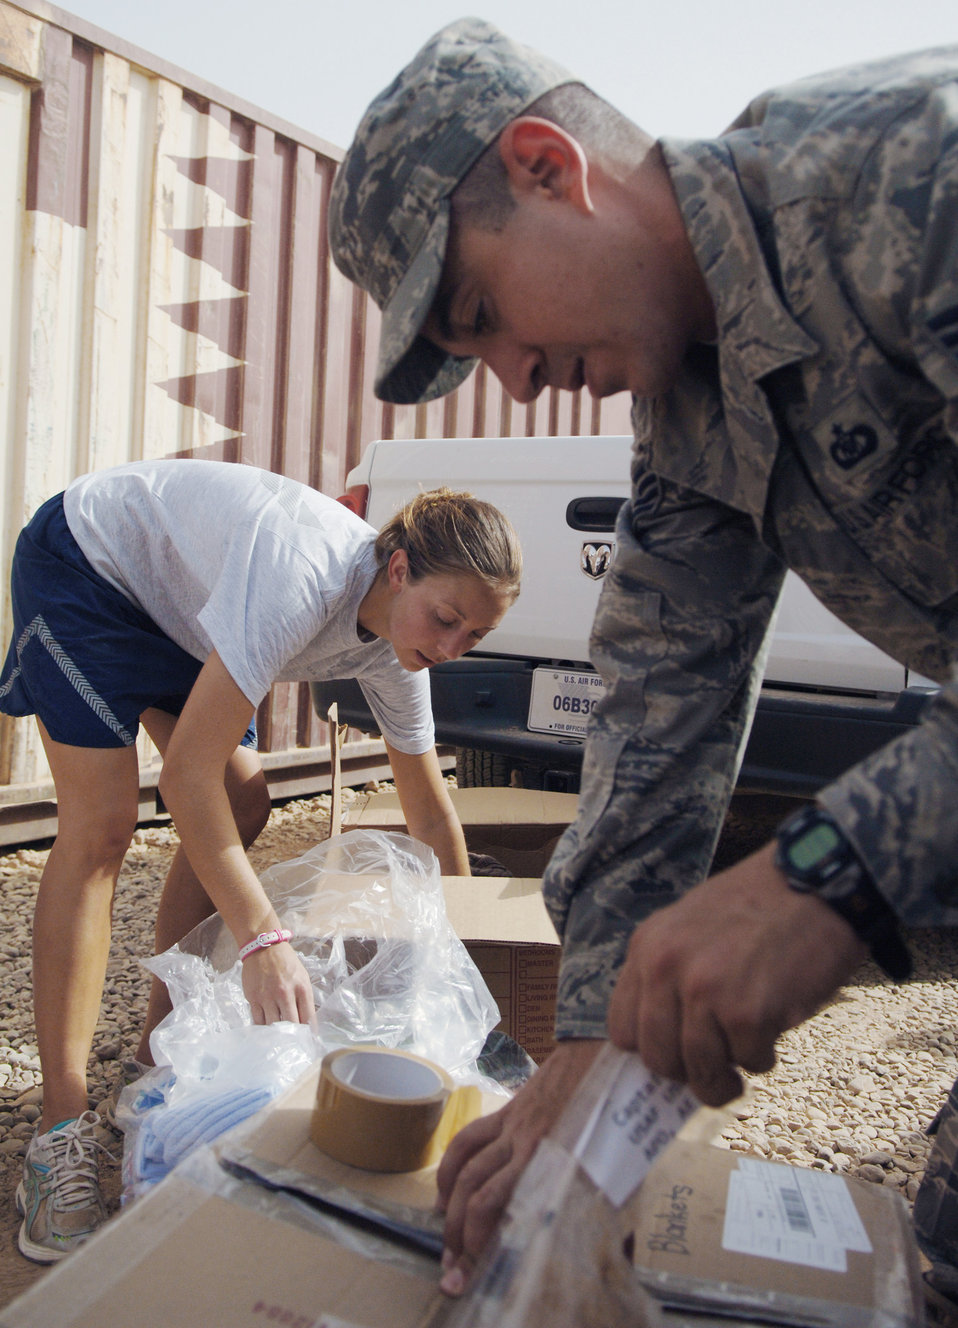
Iraqi children get a kick out of donations

1st. Lt. Hayley Hartstein and Staff Sgt. Anthony Rigazio load boxes of donated clothing, toys and soccer balls July 15 at Joint Base Balad, Iraq. The Pennsylvania State University chapter of the Phi Kappa Tau fraternity sponsored a donation drive at a soccer tournament in June, and then shipped the balls here for distribution to children near Balad. Lieutenant Hartstein is assigned to the 322nd Expeditionary Fighter Squadron, and Sergeant Rigazio is from the 727th Expeditionary Air Control Squadron.